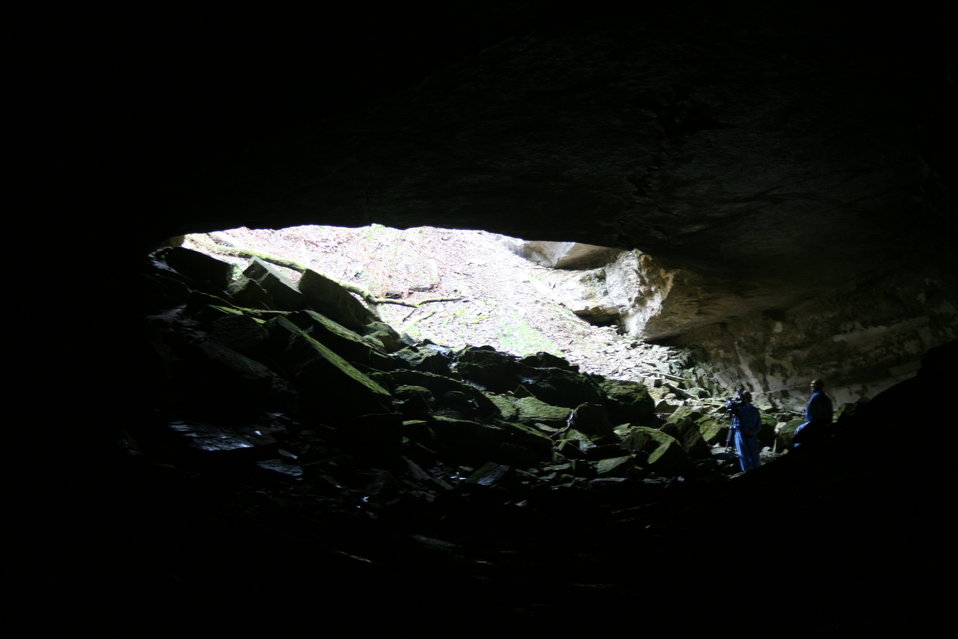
Cave entrance